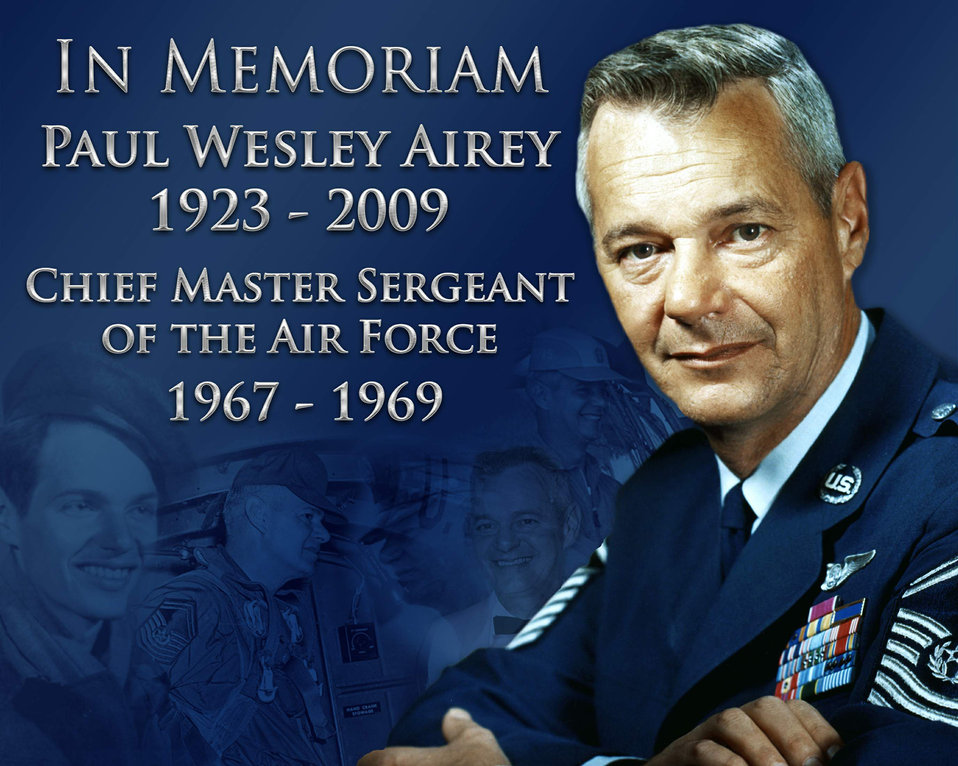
Air Force Mourns the Loss of First Chief Master Sergeant of the Air Force

Former Chief Master Sergeant of the Air Force Paul Wesley Airey died March 11 in Panama City, Fla. Chief Airey held the top enlisted from April 3, 1967 to July 31, 1969. During his tenure he worked to change loan establishments charging exorbitant rates outside the air base gates and to improve low retention during the Vietnam Conflict. Chief Airey also led a team that laid the foundation for the Weighted Airman Promotion System, a system that has stood the test of time and which is still in use today. He also advocated for an Air Force-level Senior Noncommissioned Officer Academy. Chief Airey retired August 1, 1970.